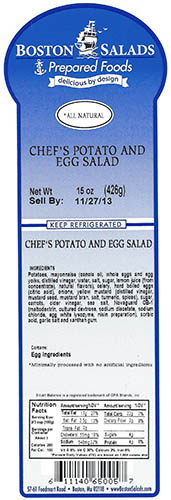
RECALLED – Prepared salads

October 24, 2013 – Product Recall – Boston Salads and Prepared Foods Recalling Ready-To-Eat Products Because of Possible Health Risk.